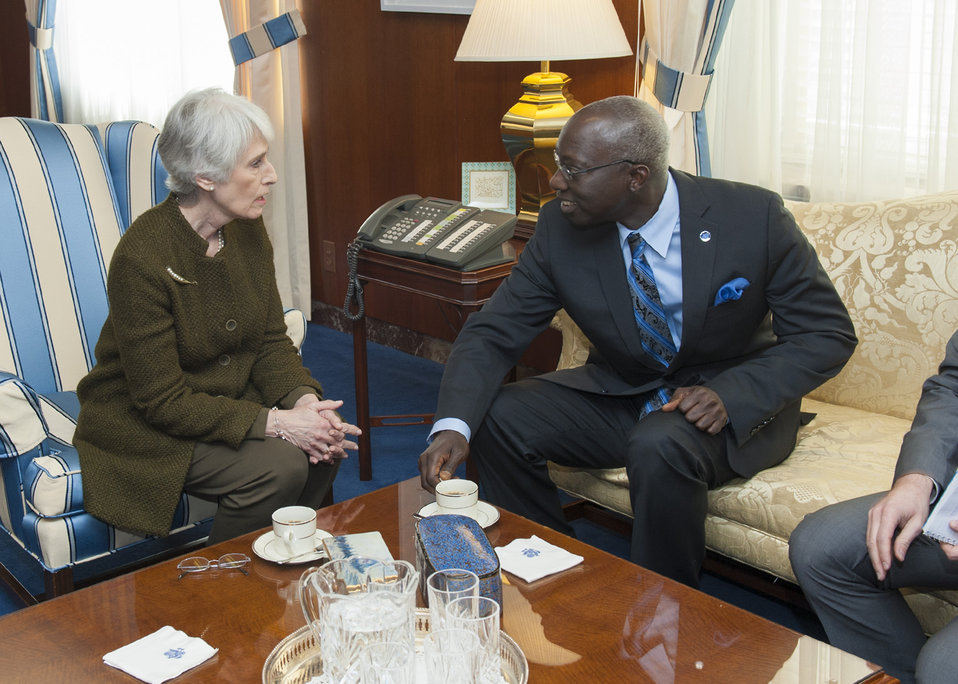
Under Secretary Sherman Meets With UN Special Adviser Dieng

Under Secretary for Political Affairs Wendy Sherman, left, pictured with UN Special Adviser on the Prevention of Genocide Adama Dieng, right, on March 26th, 2013, during consultations in Washington on U.S. and UN efforts on atrocity early warning, prevention and response.